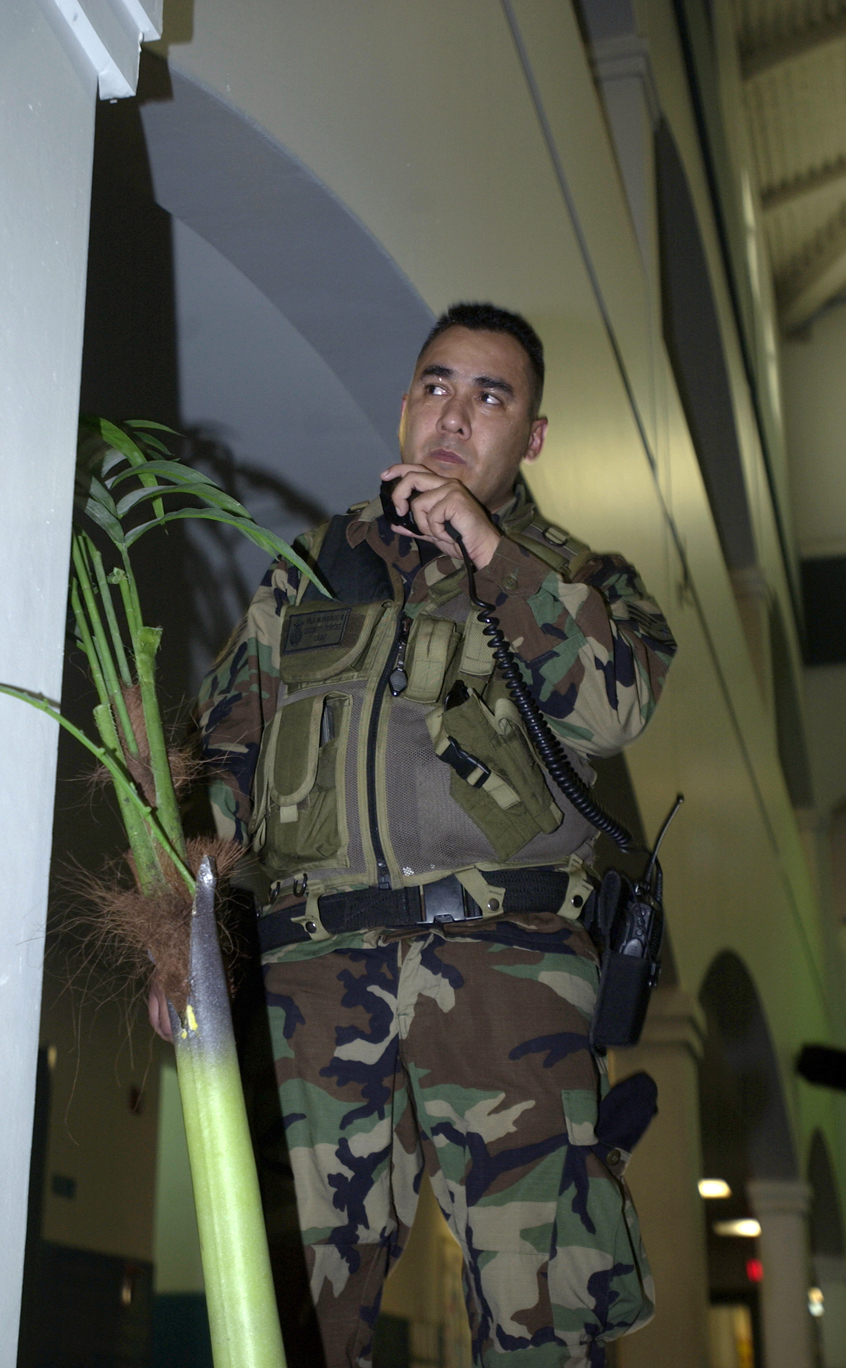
Hostage negotiation exercise

During a hostage negotiation exercise, Tech. Sgt Felix Hurtado watches the door of an elementary school classroom where an upset parent has taken four students and a teacher captive, Wednesday, Feb. 22, 2006, at Anderson Air Force Base, Guam. Sergeant Hurtado is with the 36th Security Forces Squadron.